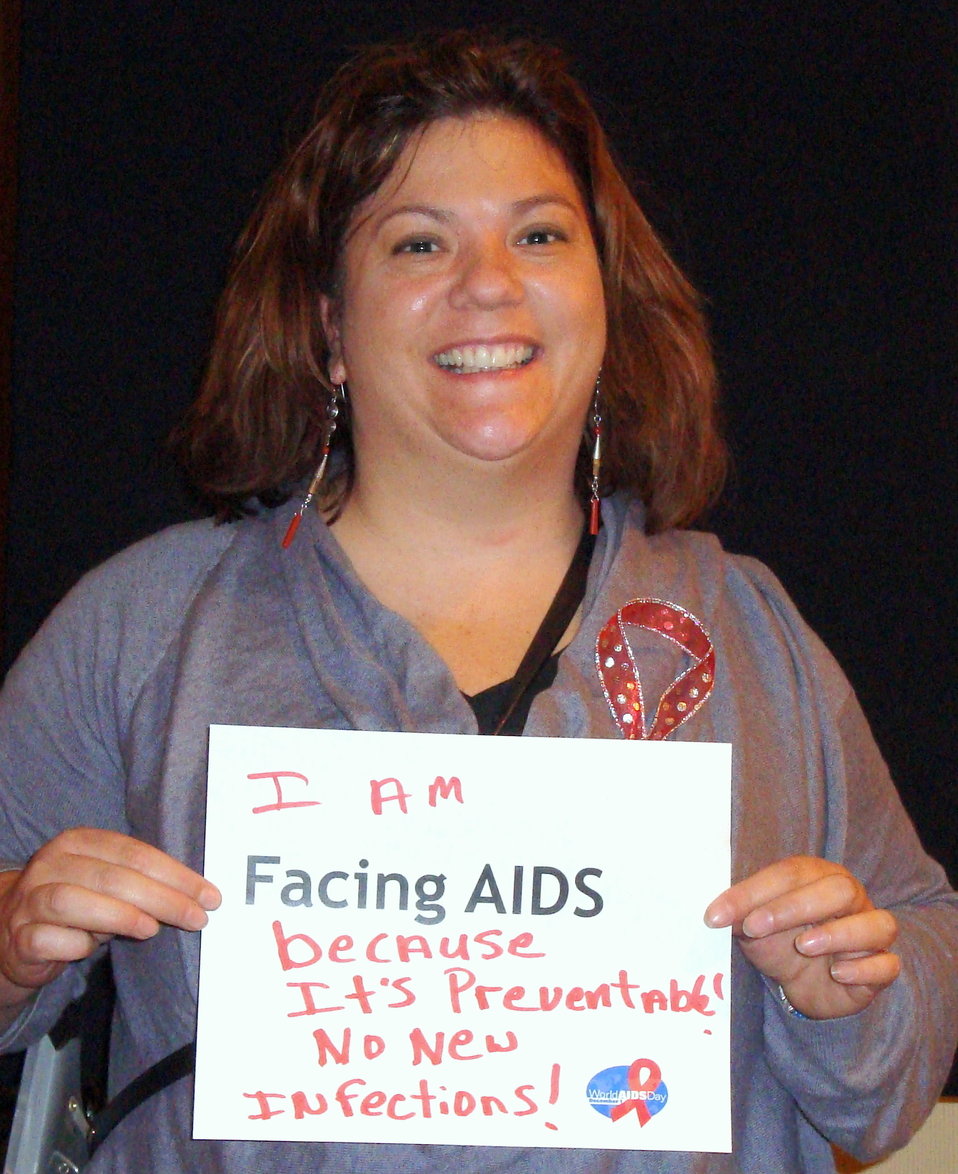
FacingAIDSCampaign 010